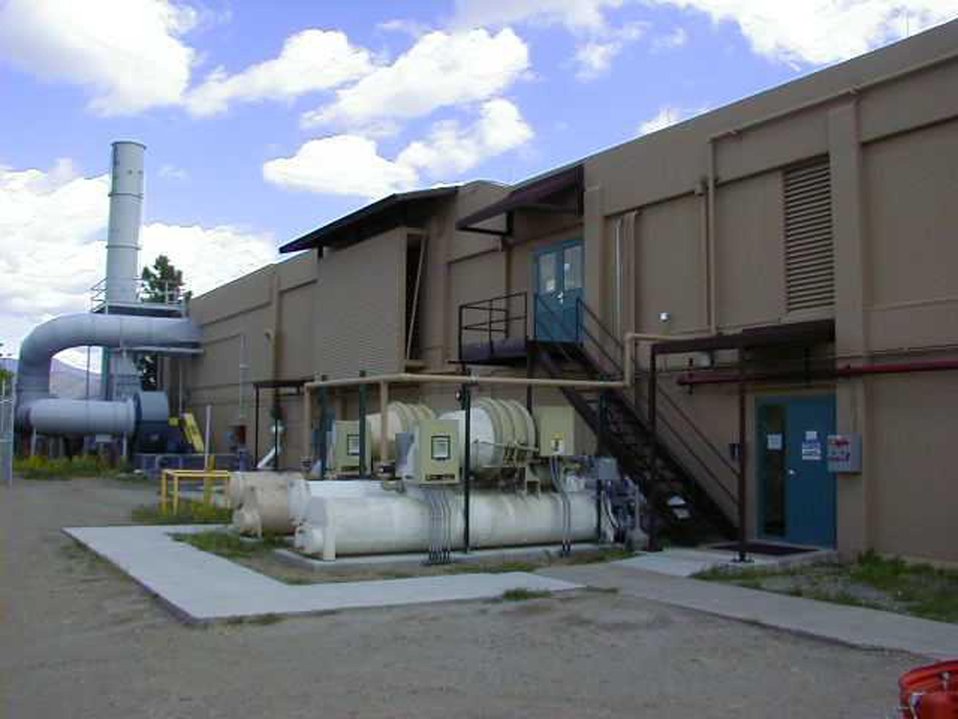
THE BERYLLIUM TECHNOLOGY FACILITY AT LOS ALAMOS NATIONAL LABORATORY.

LANL'S BERYLLIUM TECHNOLOGY FACILITY RECEIVED A DEFENSE PROGRAMS AWARD OF EXCELLENCE FROM DOE'S NATIONAL NUCLEAR SECURITY ADMINISTRATION. THIS FACILITY IS THE FIRST STATE-OF-THE-ART FACILITY IN THE U.S. DESIGNED SPECIFICALLY FOR WORKING WITH BERYLLIUM. THE AWARD RECOGNIZES FIVE YEARS OF WORK TO BEGIN PROCESSING BERYLLIUM METAL, AN EFFORT THAT INCLUDED THE DEMOLITION OF AN EXISTING FACILITY AND THE CONSTRUCTION OF A NEW 16000 SQUARE FOOT FACILITY.